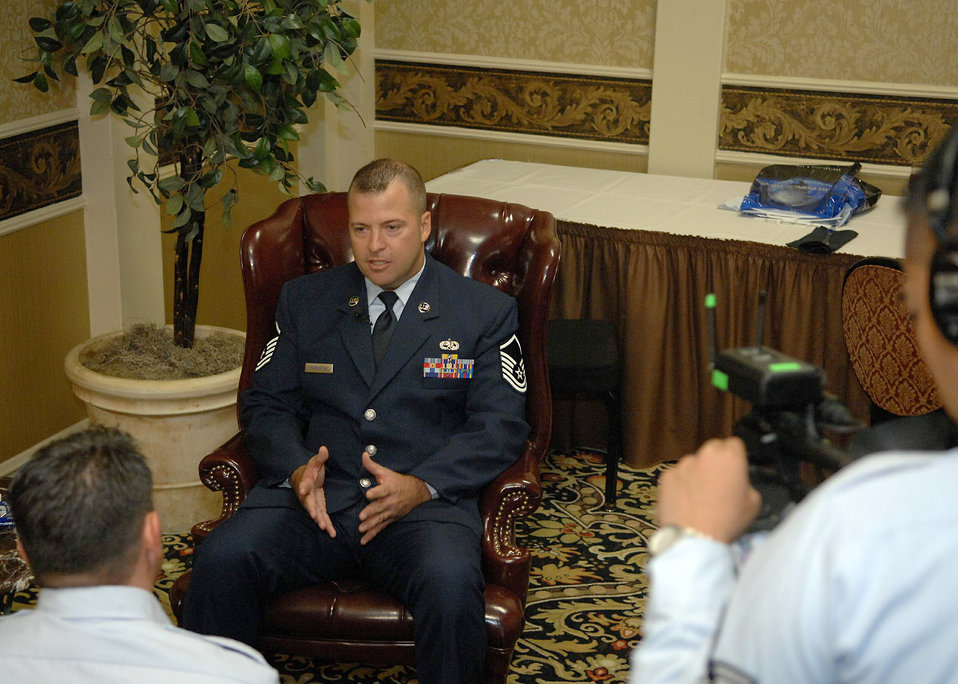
Tuskegee Airmen convention recognizes top Airmen

Master Sgt. Derek Fromenthal is interviewed by Staff Sgt. Robert Hyman and Senior Airman Jonathan Garcia, from the 4th Combat Camera Squadron, after Sergeant Fromenthal was awarded the Chief Master Sgt. Fred Archer Award during the annual Tuskegee Airmen, Inc. convention in Las Vegas, Aug. 7. The award is named for the Air Force's first African-American chief master sergeant. Tuskegee Airmen, Inc. is a non-profit organization dedicated to honoring the accomplishments of African-Americans who participated in air and ground crew and operations support in the Army Air Corps during World War II. Sergeant Fromenthal is from the 5th Combat Communications Group at Robins Air Force Base, Ga.